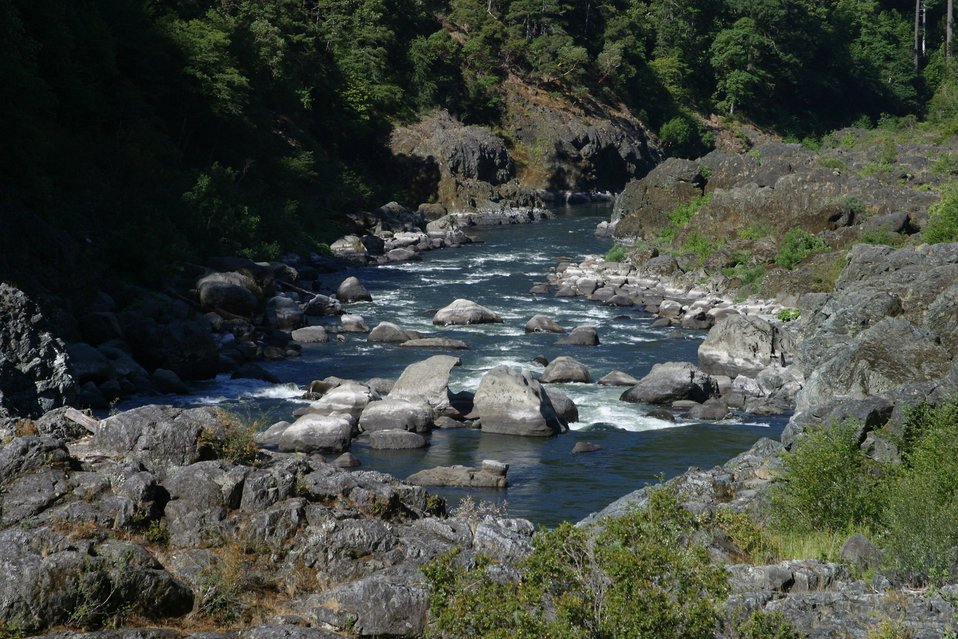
Looking down river at Blossom Rapids.